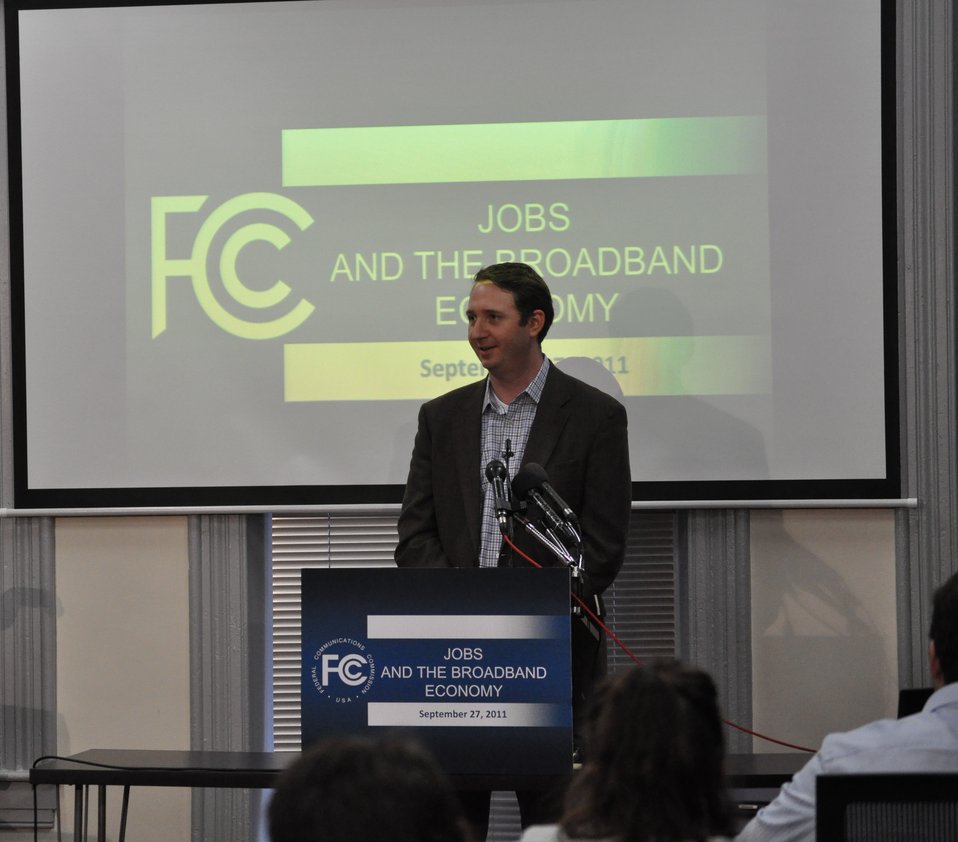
Jobs and the Broadband Economy

Tim O’Shaughnessy , LivingSocial CEO and Co-Founder